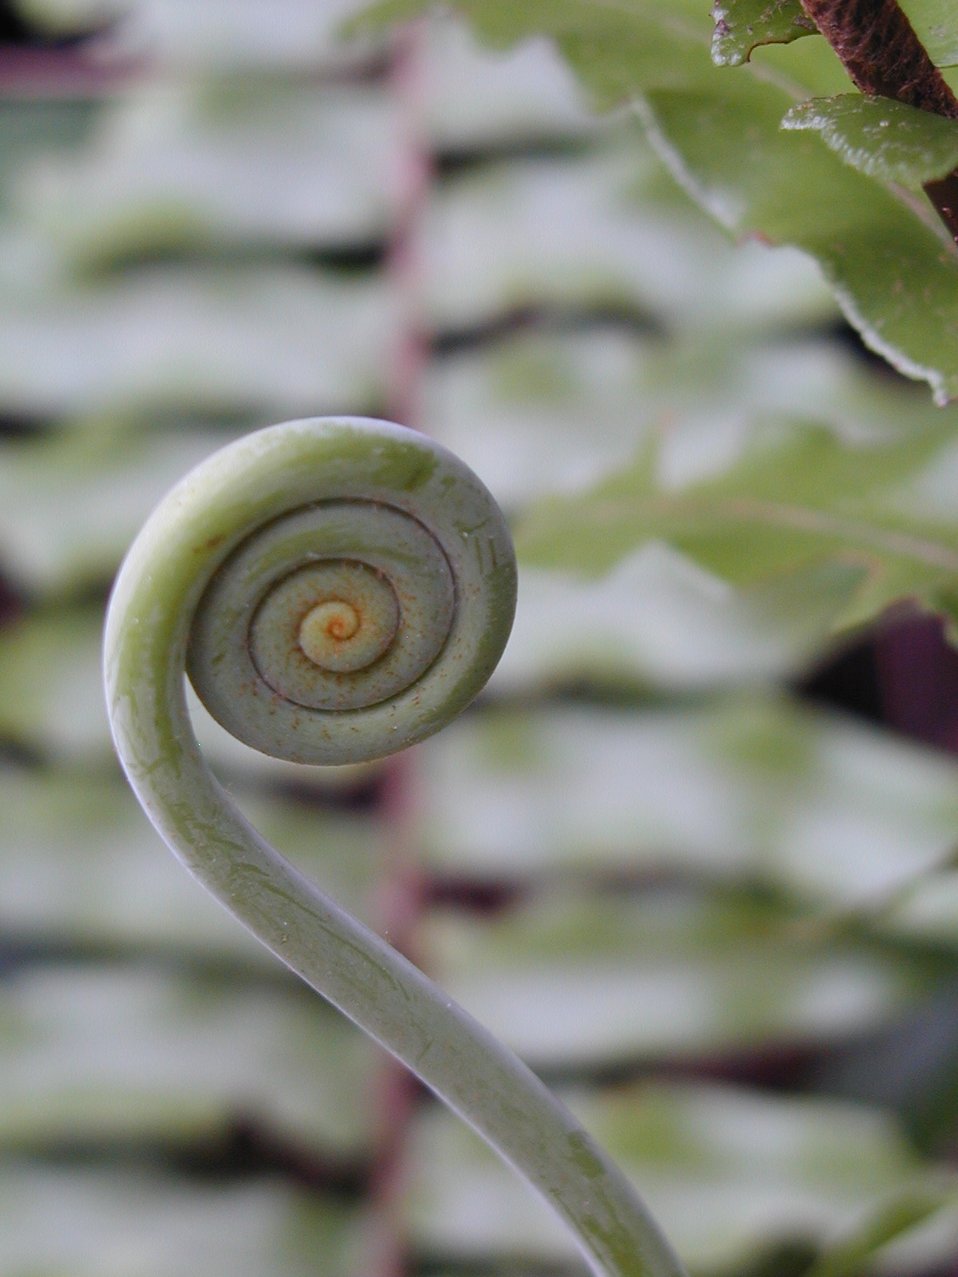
A fern fiddlehead at Isla Cocos.